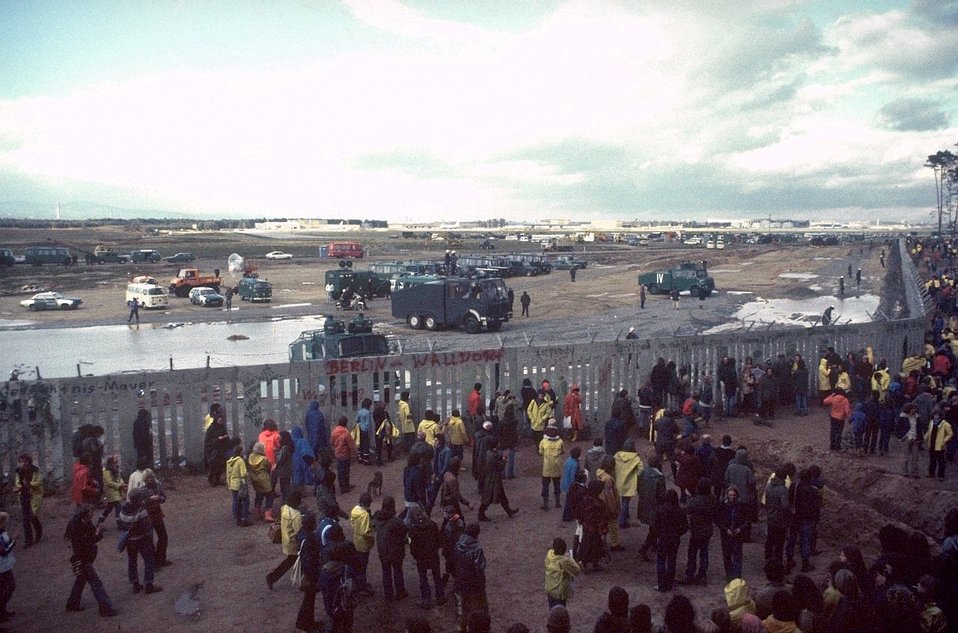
Deutsch: Betonzaun vor der im Bau befindlichen Startbahn West des Frankfurter Flughafens.